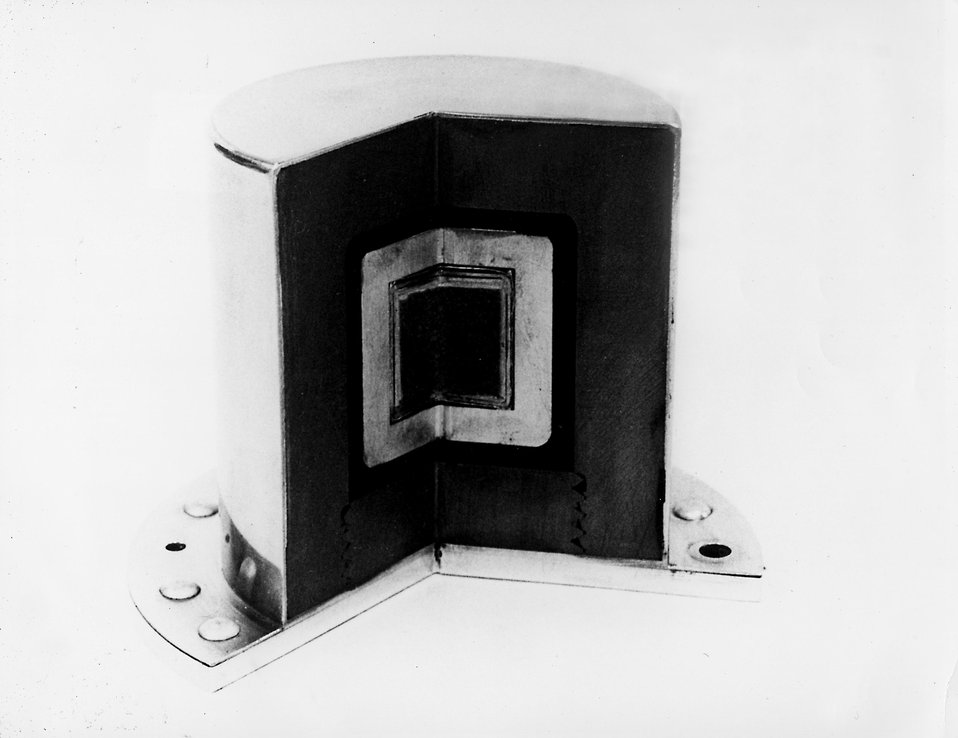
Shown in a cut-away view of the Apollo Lunar Radioisotopic Heater (ALRH) designed by the Atomic Energy Commission and fueled with plutonium. Circa 1969.